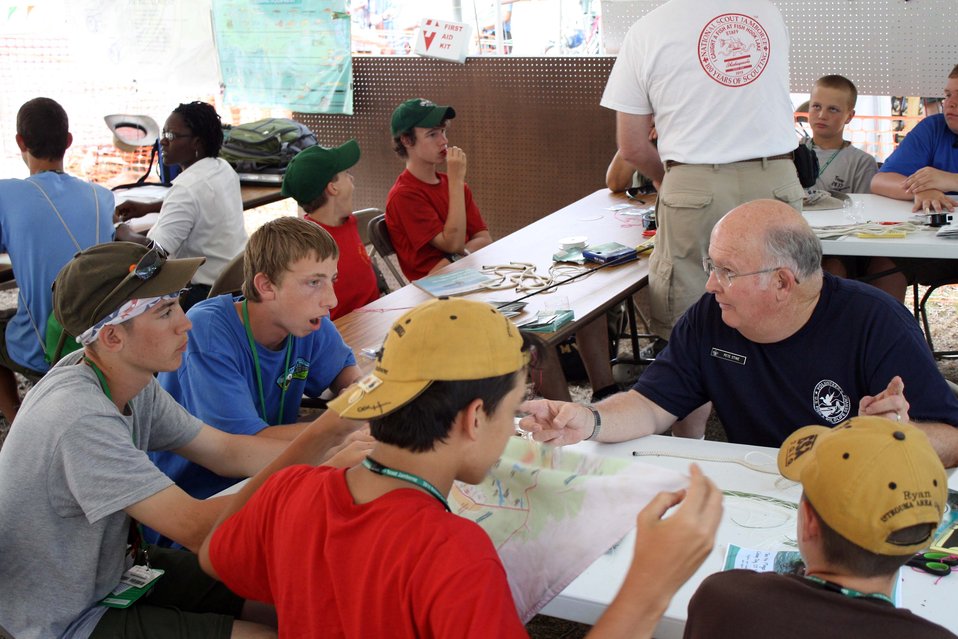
Boy Scout Jamboree 2010